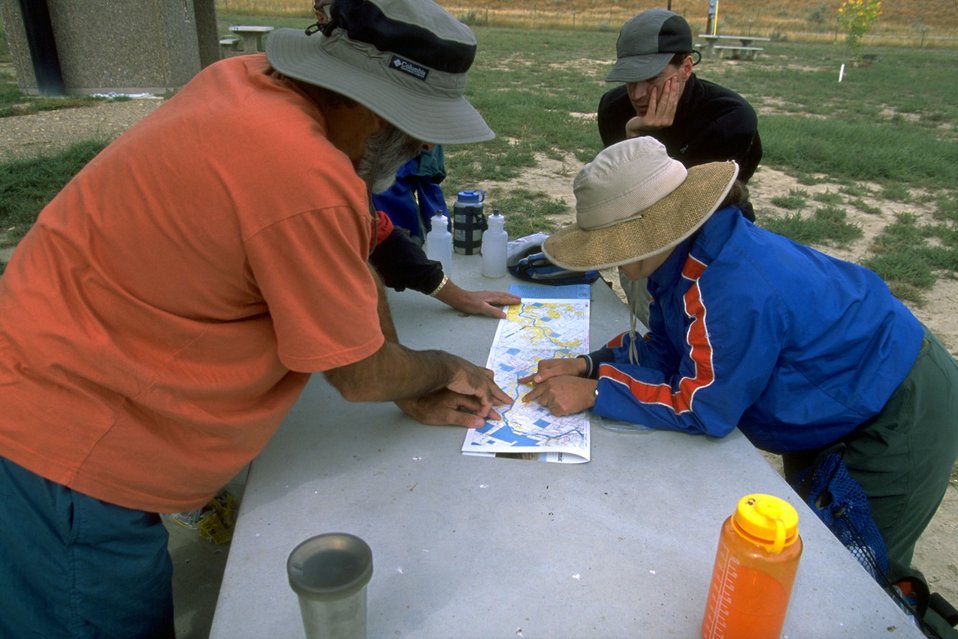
Checking the map at Coal Banks Landing